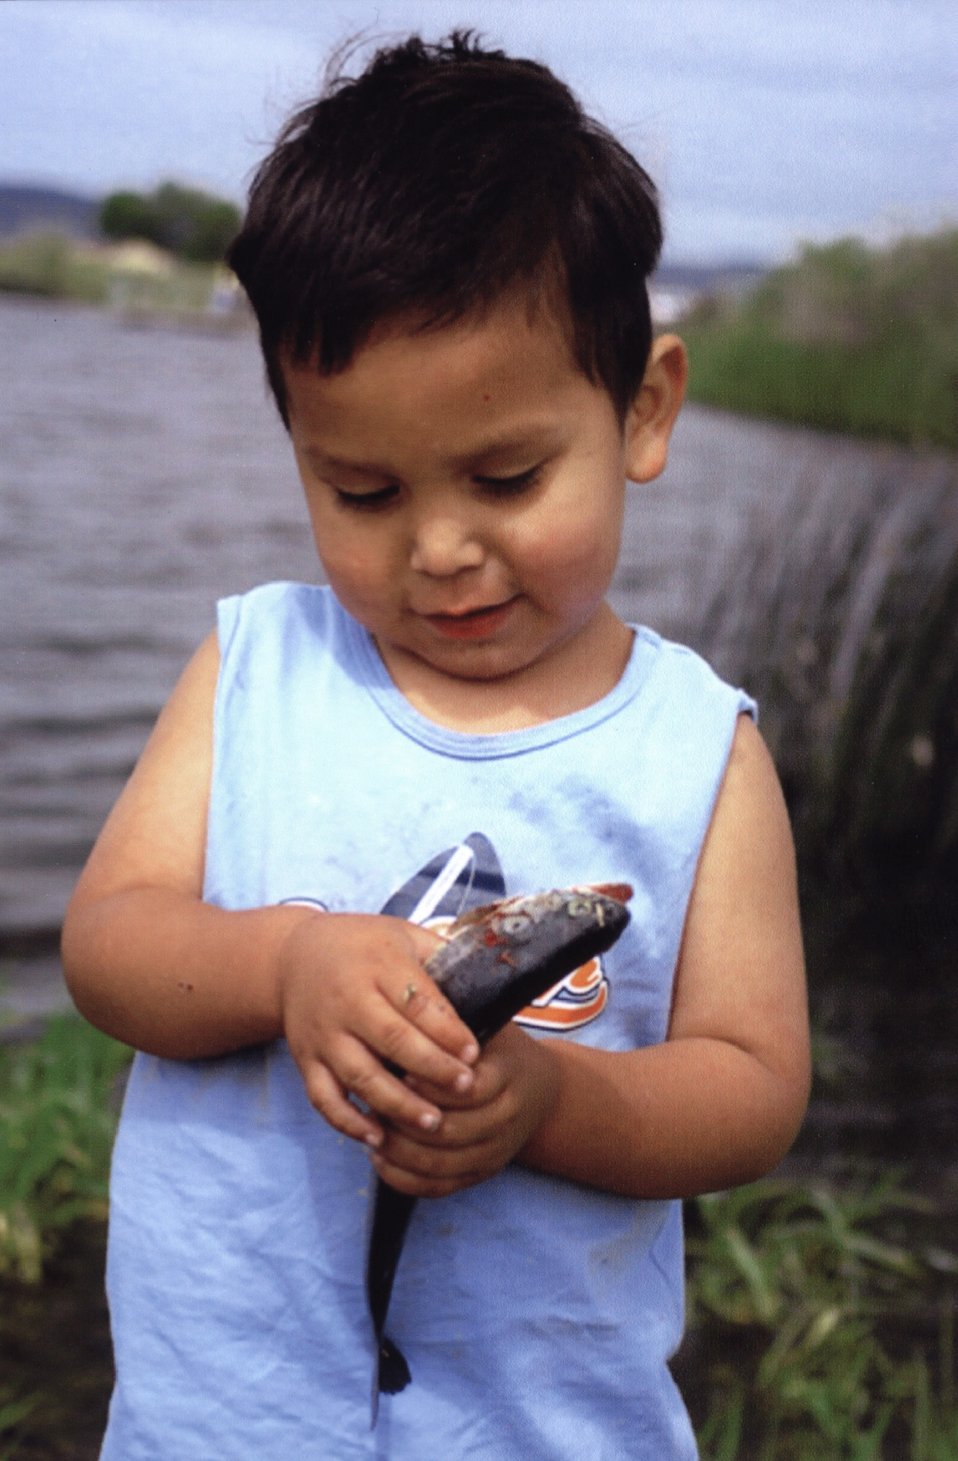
Proud fisherman at free fishing day event near Burns, Oregon. Mark Armstrong, Burns People 3